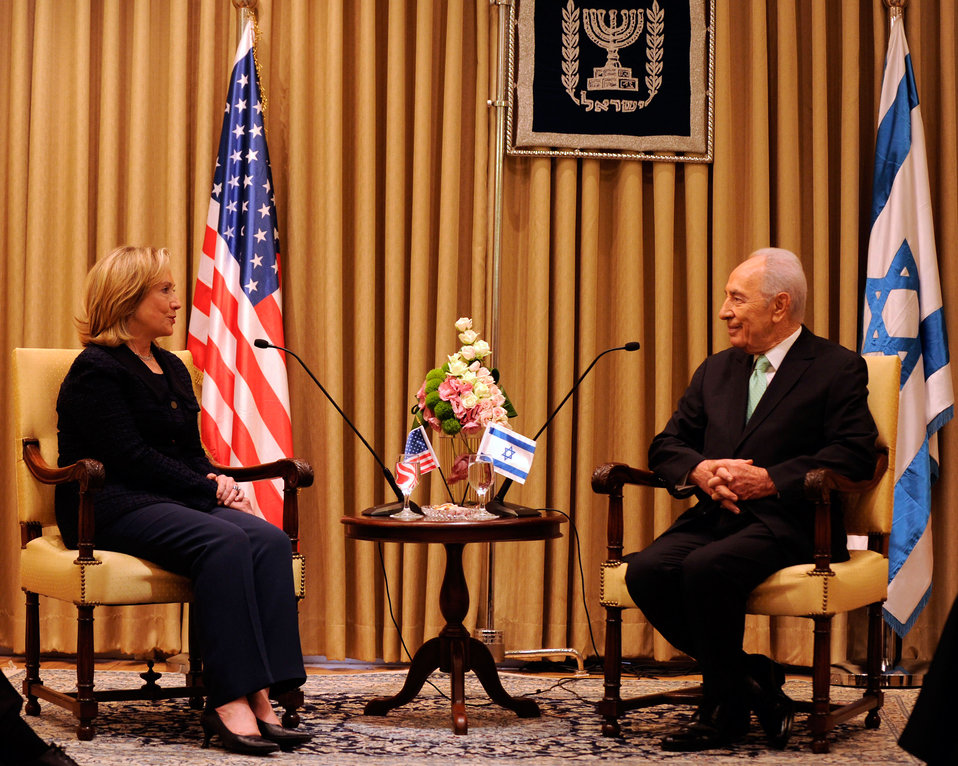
Israeli President Peres Meets With Secretary Clinton

Israeli President Shimon Peres meets with U.S. Secretary of State Hillary Rodham Clinton at the Presidential Residence in Jerusalem on September 15, 2010.